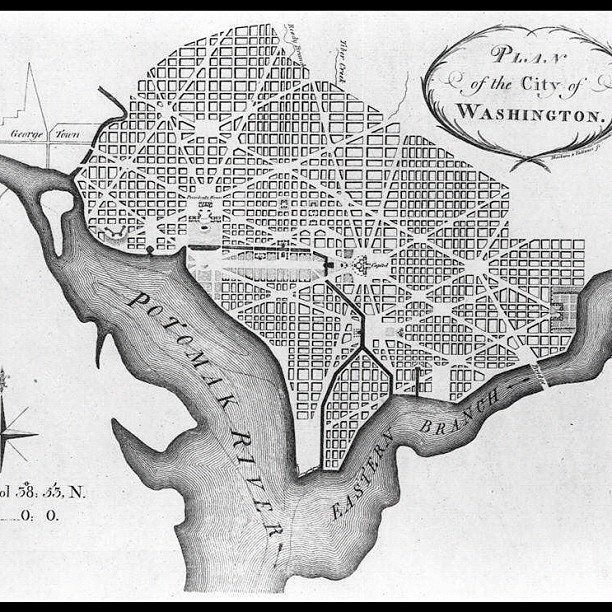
Pierre Charles L'Enfant 1792 plan for city of Washignton